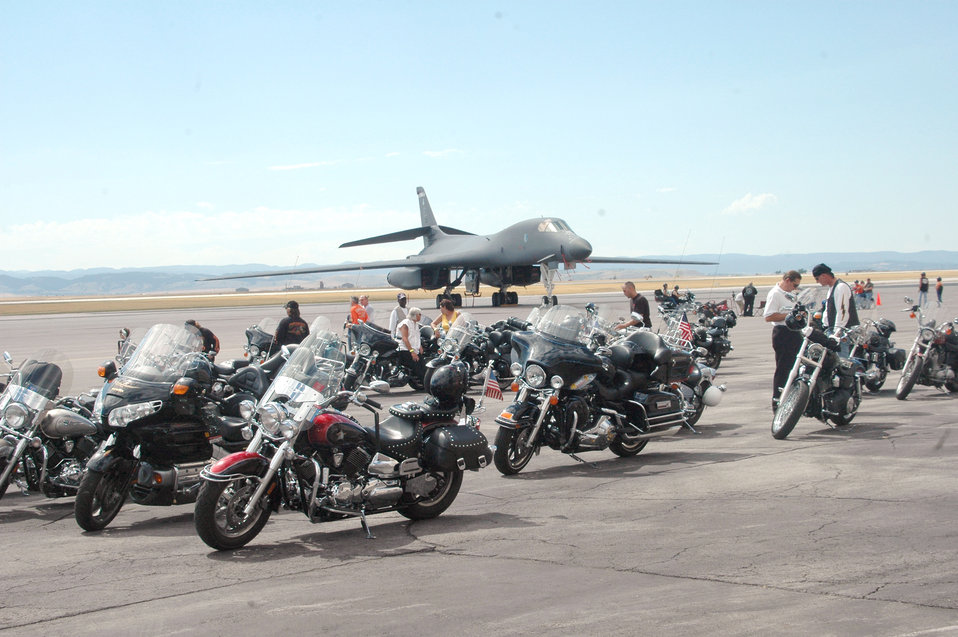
Thunder rolls

Members of the Ellsworth Dakota Thunder Motorcycle Club toured a static display of a B-1 Lancer at Ellsworth Air Force Base, S.D., on Aug. 8. Members of the local motorcycle club also had a chance to park their motorcycles in front of the aircraft for photo opportunities. Following the tour, nearly 200 riders from Ellsworth and the surrounding communities began their annual ride to the 66th Annual Sturgis Motorcycle Rally, which lasts through Aug. 13 at nearby Sturgis.